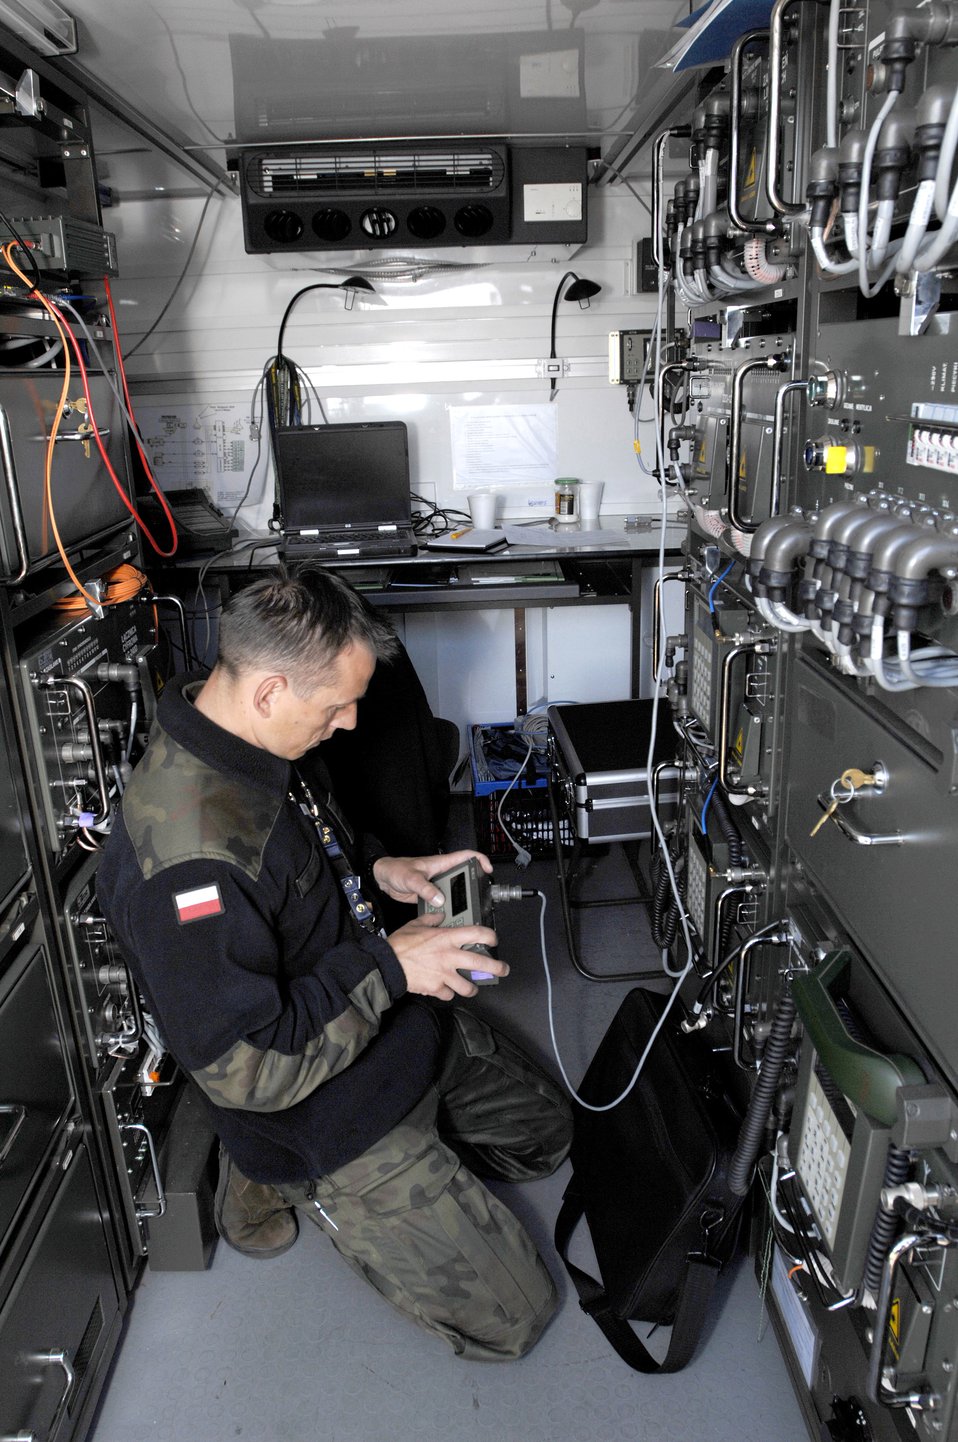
Multinational communicators network at seminars

Polish army Sgt. Ireneusz Kantarek configures the telecommunications switch relay during the testing phase of exercise Combined Endeavor 2007 in Lager Aulenbach, Baumholder, Germany. The exercise, a U.S. European Command-sponsored exercise, brings the U.S. and other nations together, especially those in NATO or Partnership for Peace, to plan and execute interoperability testing of command, control, communications and computer systems in preparation for future combined humanitarian, peacekeeping and disaster relief operations.